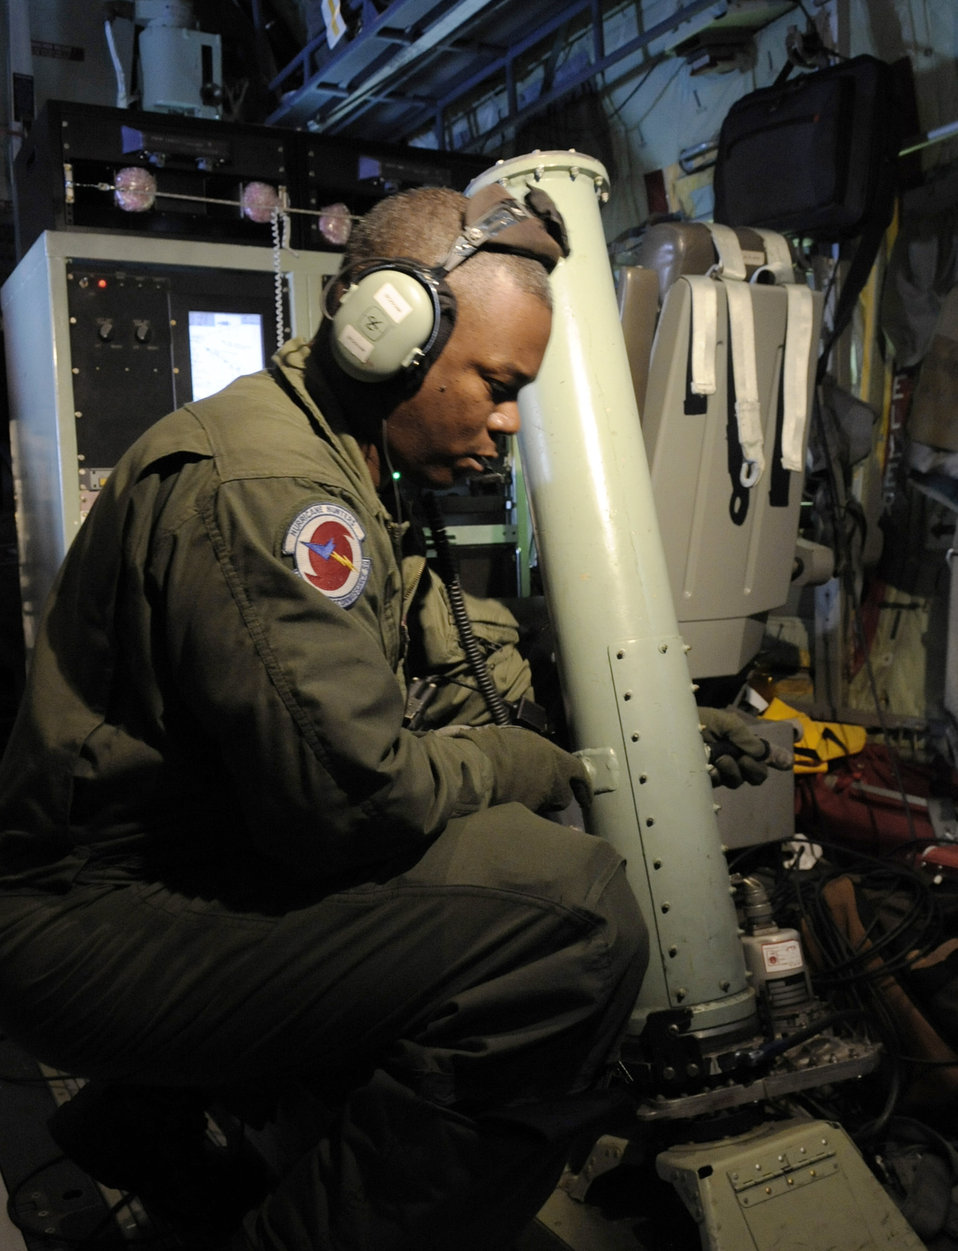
More than a loadmaster

Tech. Sgt. Troy Bickham loads a dropsonde in the launch chute of a WC-130J Hercules during a training mission June 6 to St. Croix, Virgin Islands, from Keesler Air Force Base, Miss. Sergeant Bickham is a weather reconnaissance loadmaster assigned to the Hurricane Hunters of the 53rd Weather Reconnaissance Squadron. The training mission prepared the Air Force Reserve Command's